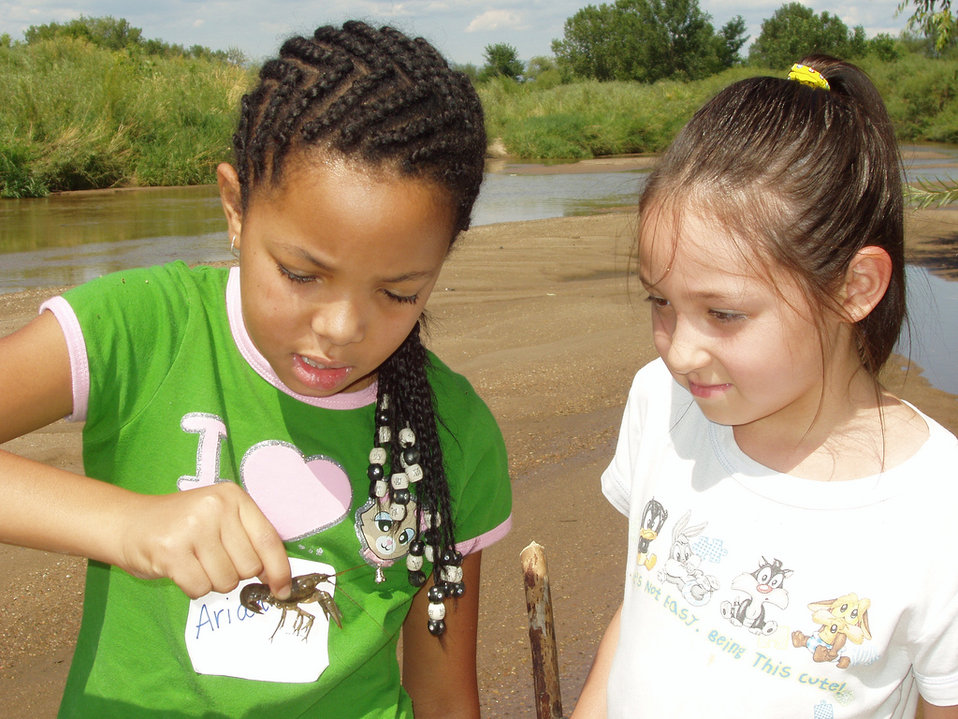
carterburgesswetlands (21)

Uploaded for Flickr member sgilmore42.

Two young ladies from Environmental Learning for Kids (ELK) take a break from a river cleanup to explore the local aquatic wildlife.